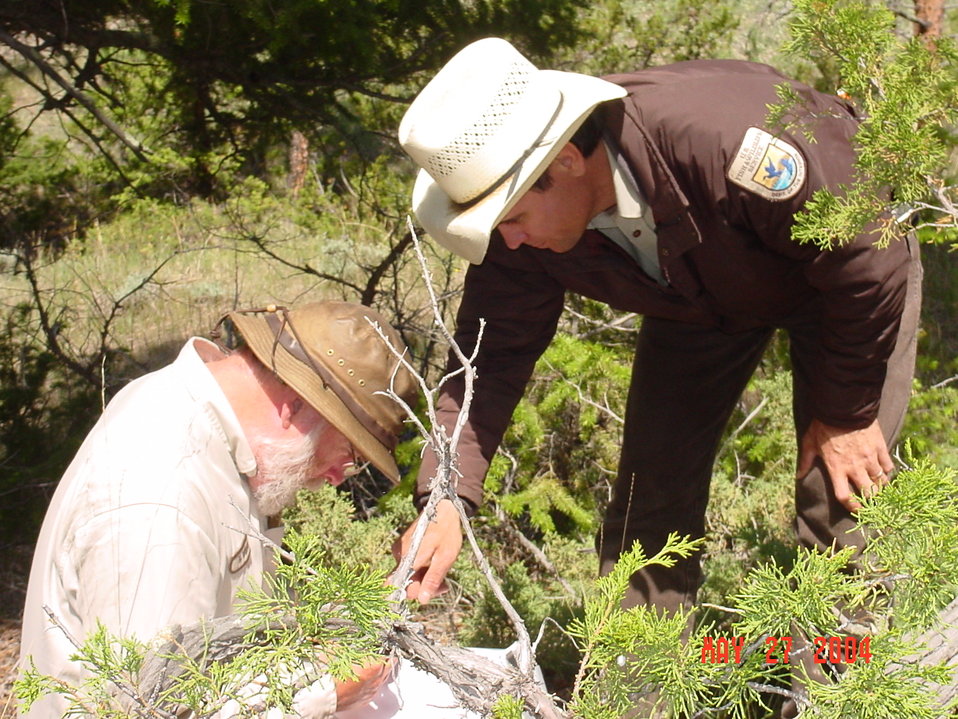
Sentinel Plants

Charles M. Russell NWR staff monitor sentinel plants which are highly palatable shrubs and forbs that decrease under grazing pressure. These plants are nutritious and important to birds and other wildlife.